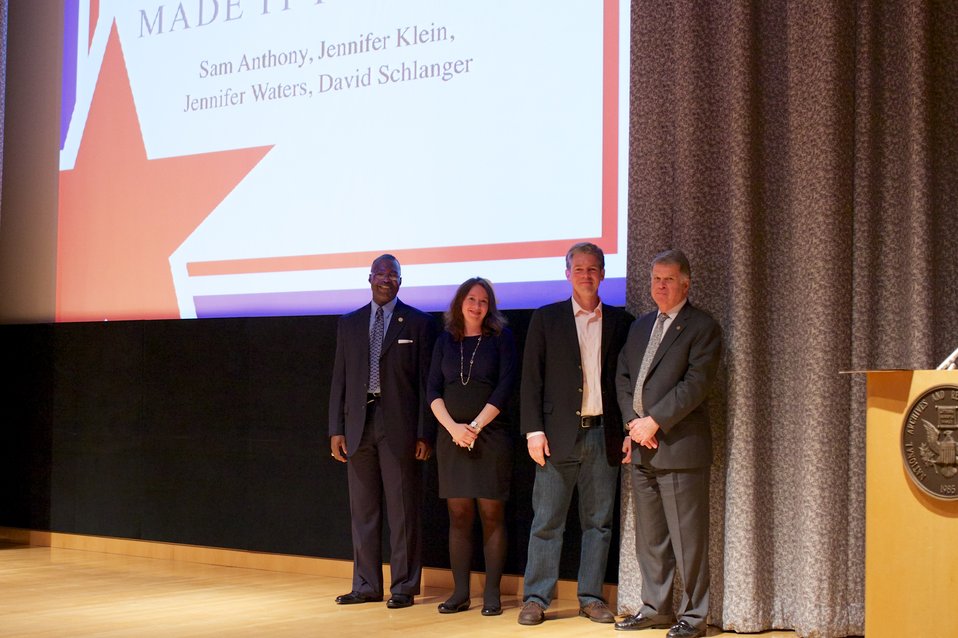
CFC Recognition Event